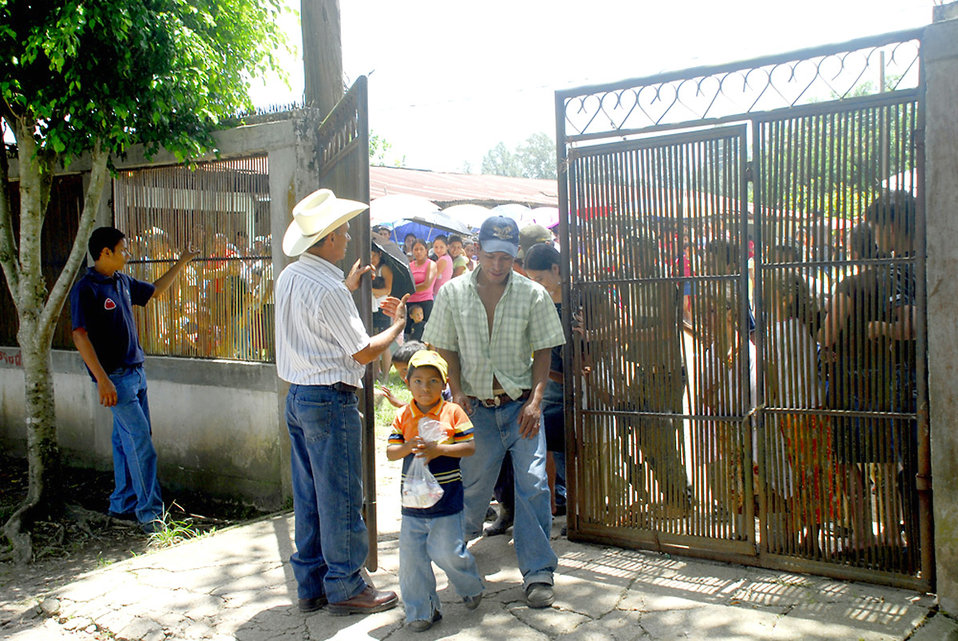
MEDRETE provides free medical care

A Honduran local, Juan Ruiz, controls the flow of traffic in and out of a clinic during a medical readiness training exercise in Santa Barbara, Honduras, July 25. More than 740 people attended the MEDRETE for access to free medical care and preventative health measures.